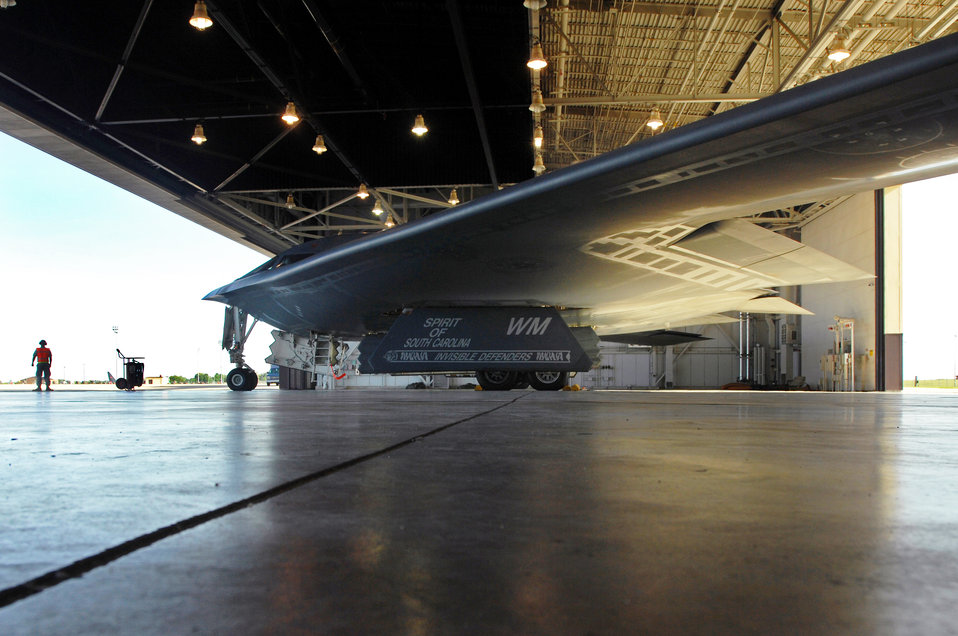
Ready for takeoff

A B-2 Spirit waits as crew chiefs with the 509th Aircraft Maintenance Squadron prepare it for takeoff Aug. 22 at Whiteman Air Force Base, Mo. Twenty B-2 Bombers are assigned to the 509th Bomb Wing. The B-2 brings massive firepower to bear, in a short time, anywhere on the globe through previously impenetrable defenses.